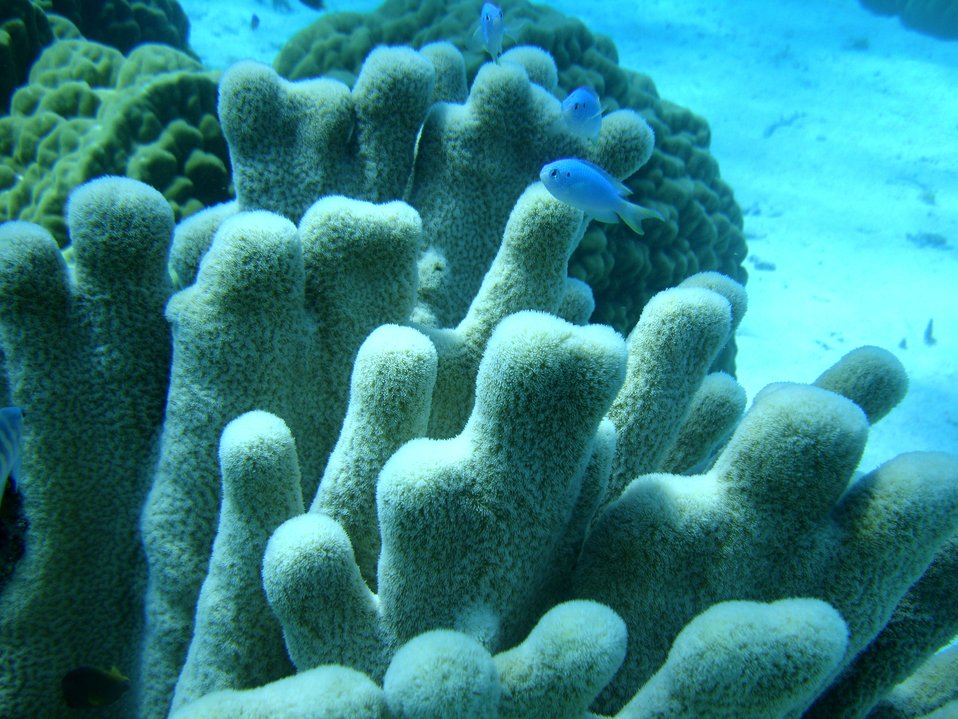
Poritidae coral Porites sp.